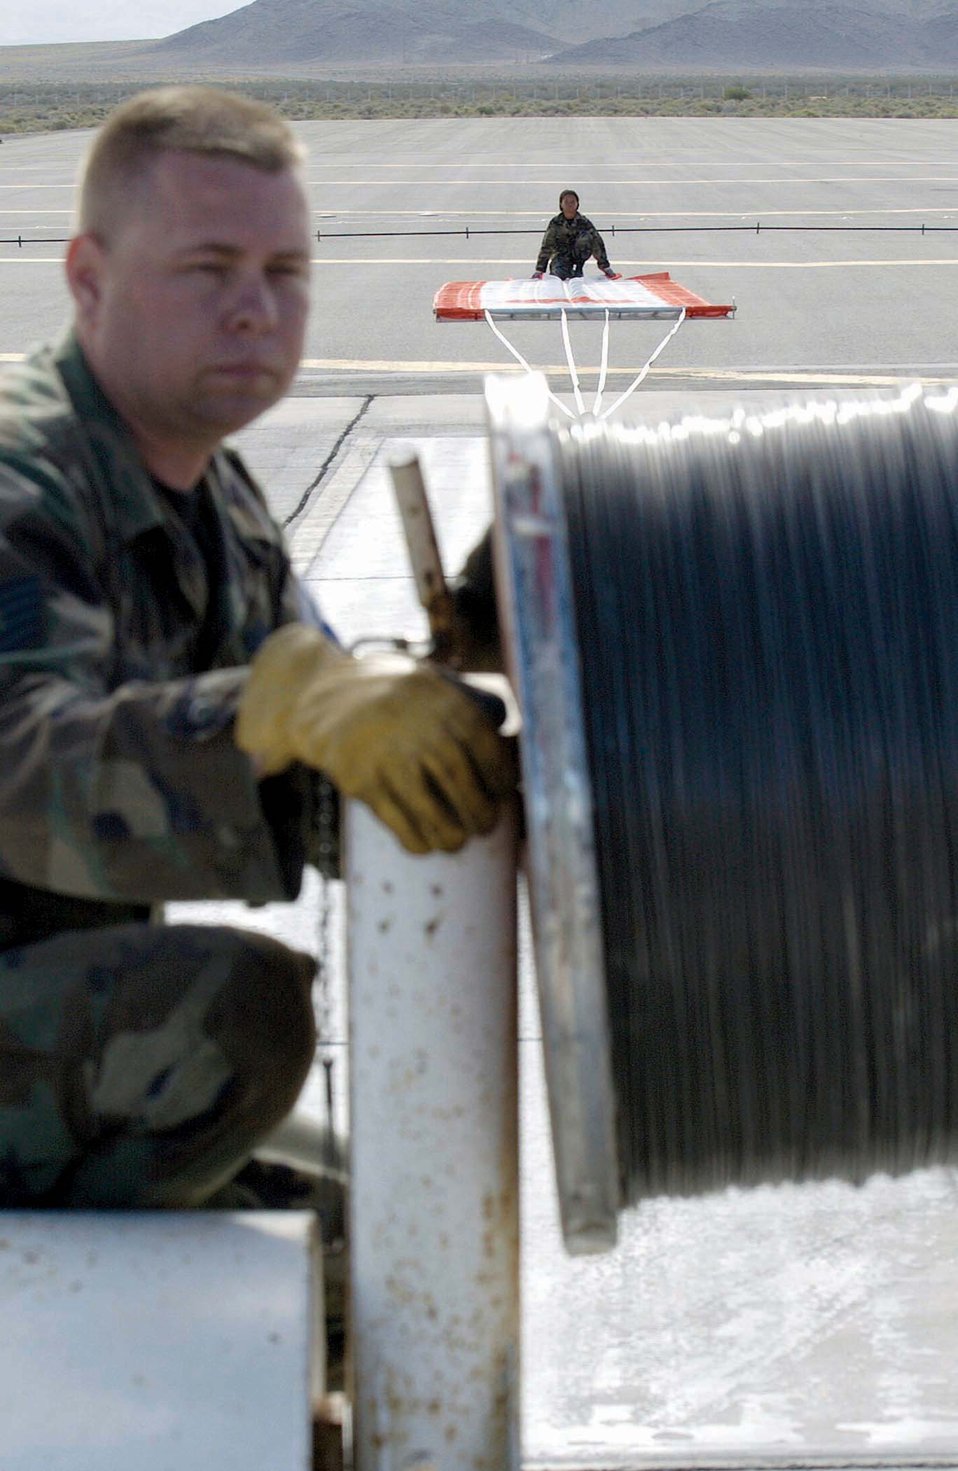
Hitting the mark

NELLIS AIR FORCE BASE, Nev. -- (From left) Tech. Sgt. Eric Webb extends 1,500 feet of armored cable attached to a banner Senior Airman Edna Burton holds. The banner was used for target practice by F-15 Eagle pilots during a training exercise May 20 over the Nevada Test and Training Range near here. Sergeant Webb is assigned to the 390th Fighter Squadron at Mountain Home Air Force Base, Idaho. Airman Burton is assigned to the 726th Air Control Squadron at Mountain Home AFB.